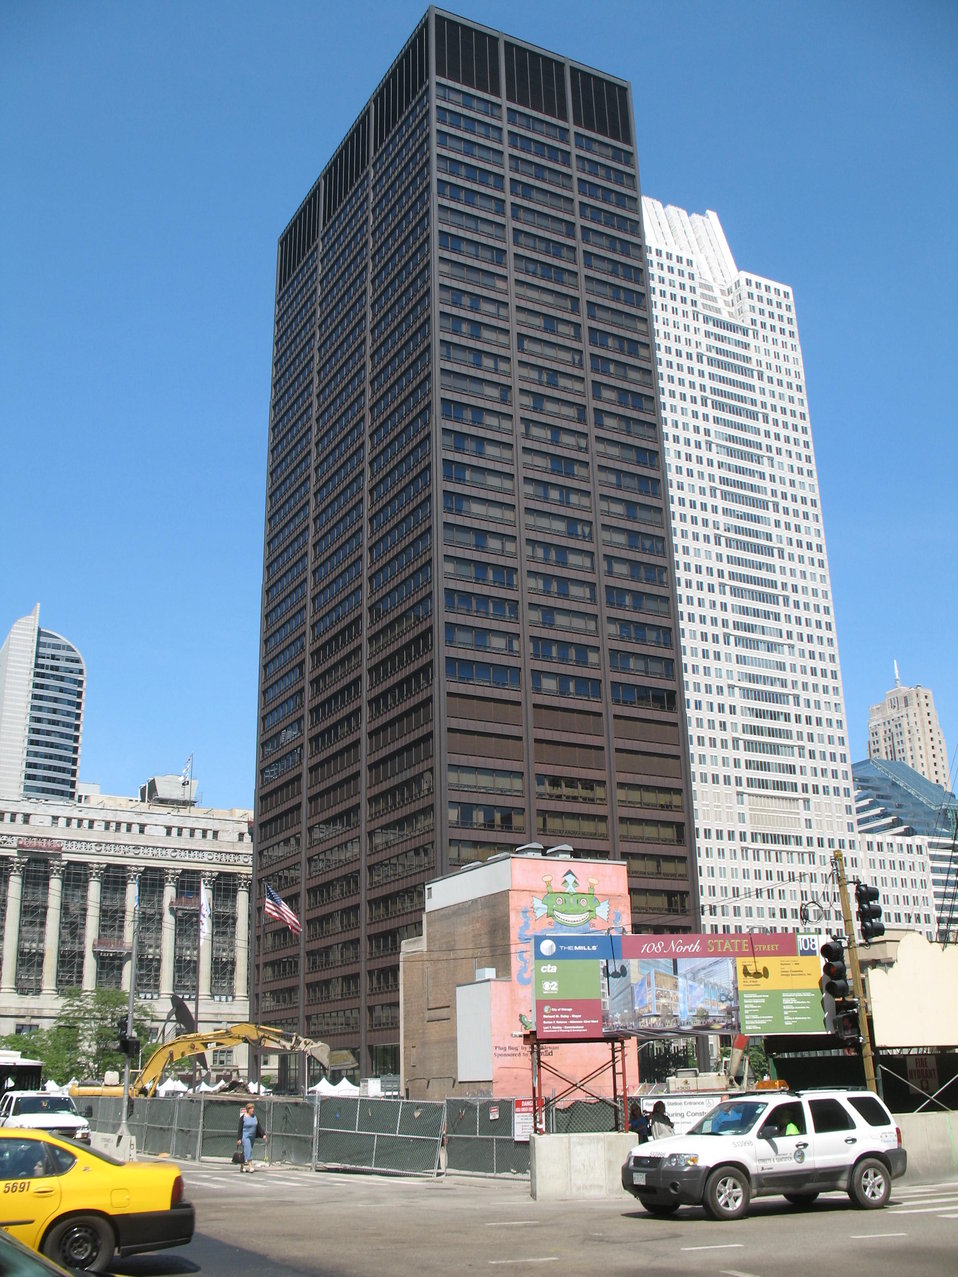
en:108 North State Street